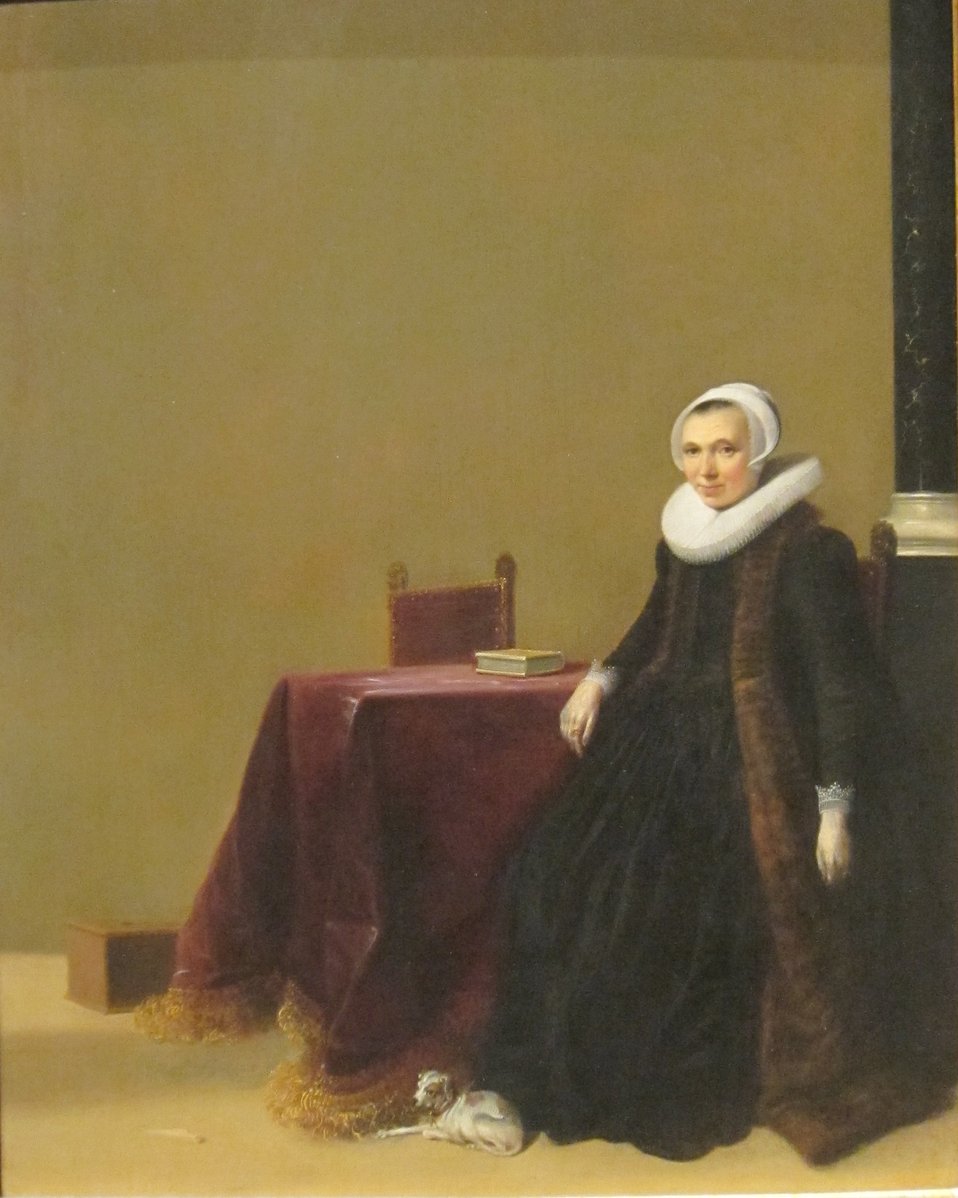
'Portrait of a Woman with a Dog', oil on wood painting by Hendrick Gerritsz. Pot, c. 1635